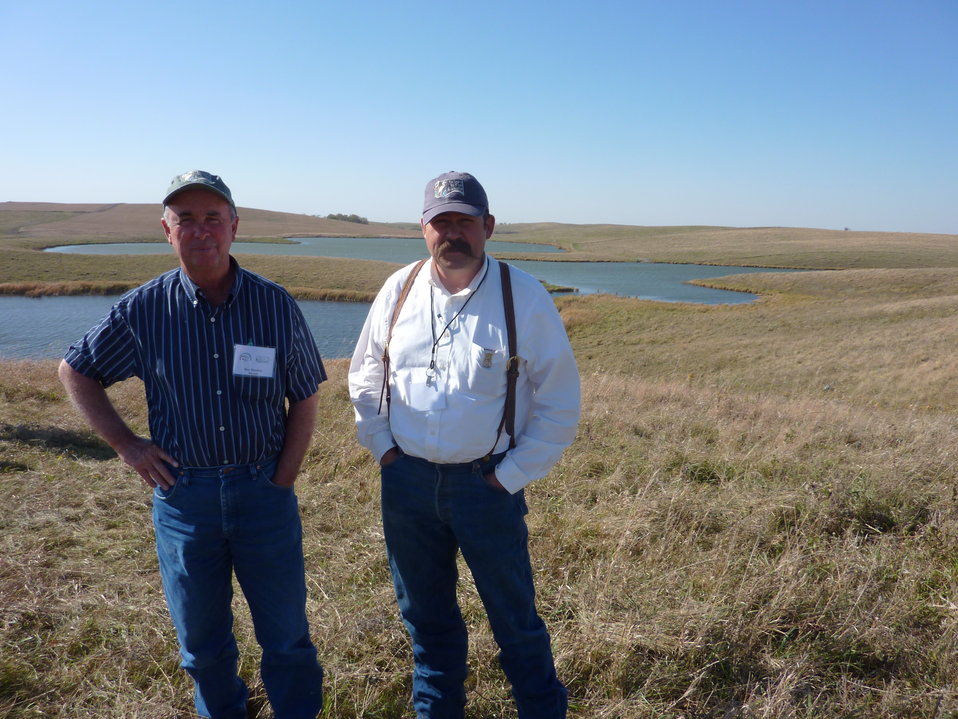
Private Lands Day 2011

South Dakota